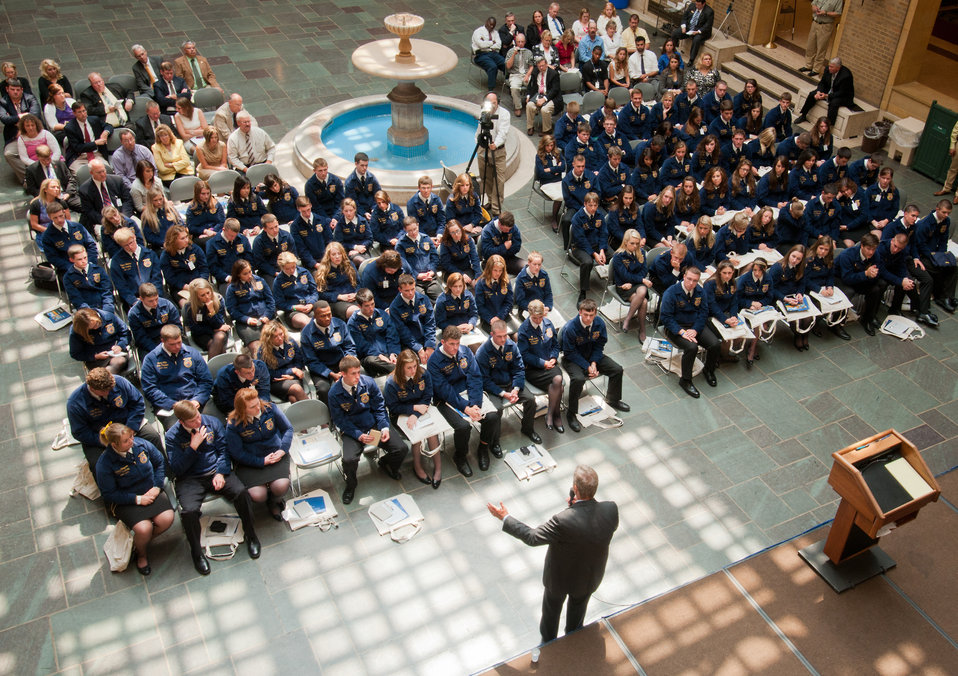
Agriculture Secretary Tom Vilsack speaks with the National Future Farmers of America (FFA) leadership at the U.S. Department of Agriculture in Washington, DC, on Thursday, July 28, 2011.